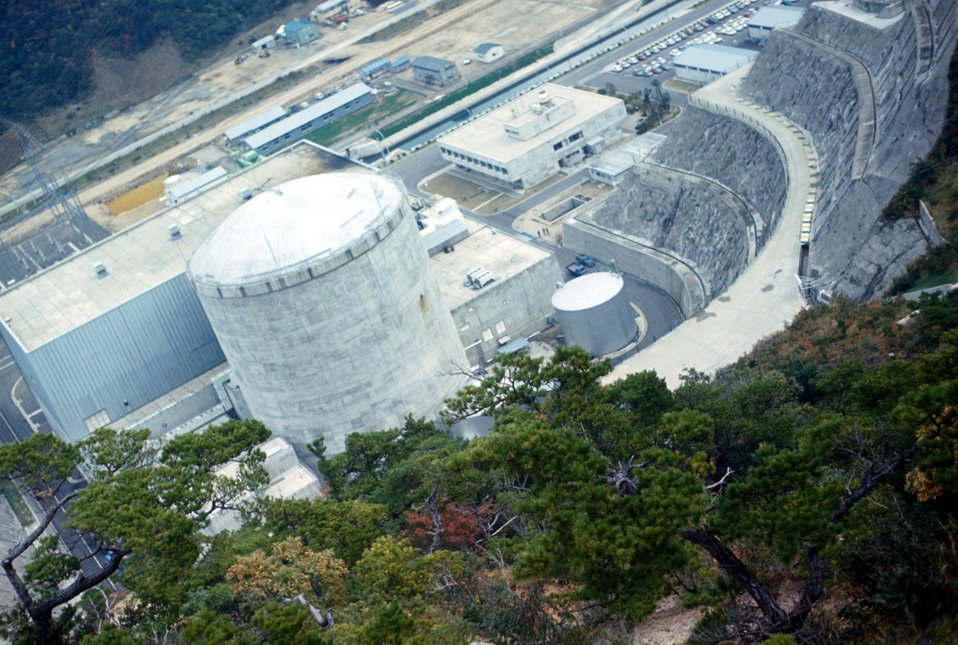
Japan - Tsuruga Plant - Japco Nuclear Reactor. c. 1970